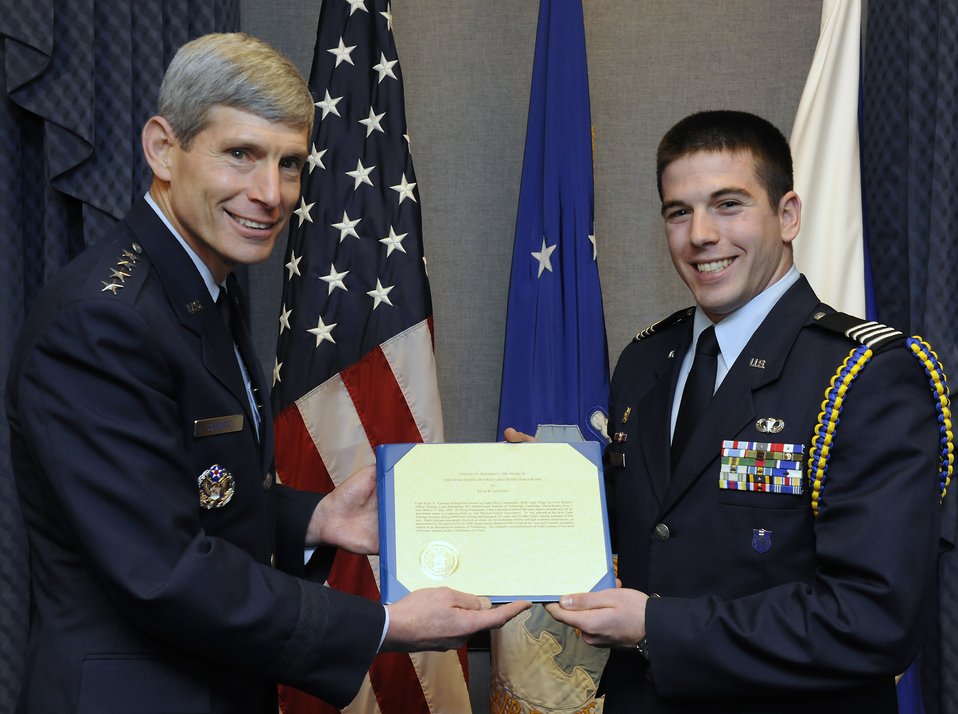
Cadet of the Year

Air Force Chief of Staff Gen. Norton Schwartz presents Cadet Col. Ryan W. Castonia the citation accompanying his U.S. Air Force Cadet of the Year award for 2009 in the Pentagon April 5, 2010. Cadet Castonia is a graduate student at Massachusetts Institute of Technology and a member of MIT's Reserve Officer Training Corps. He also was honored by the Air Squadron, a private British aviation organization which has spnsored the award since 2000, and received the Air Squadron's coin from Air Commodore Ian Elliot, a Royal Air Force attache' assigned to the British Embassy in Washington.